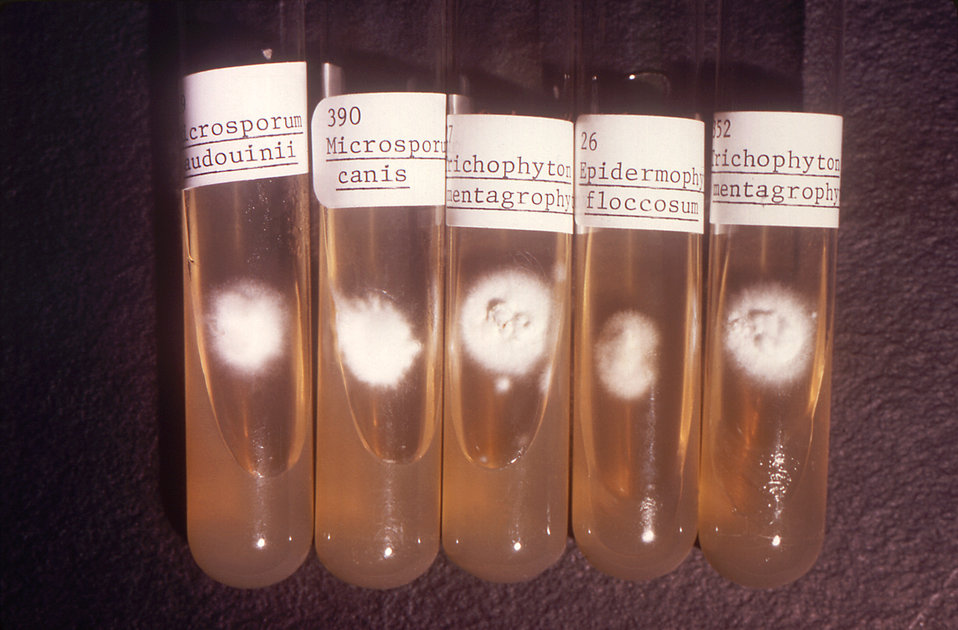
Viewed from the front, this was a study focusing on the comparison of the colonial growth and development of colonial coloration exhibited by a number of different dermatophytic fungal organisms grown on an unknown medium. From left to right the study included Microsporum audouinii, M. canis, 'fluffy' strain Trichophyton mentagrophytes, Epidermophyton floccosum, and a second tube of powdery strain T. mentagrophytes. This image was captured after one week of growth. See PHIL 14705 for a reverse view, i.e., from behind, of these colonies.